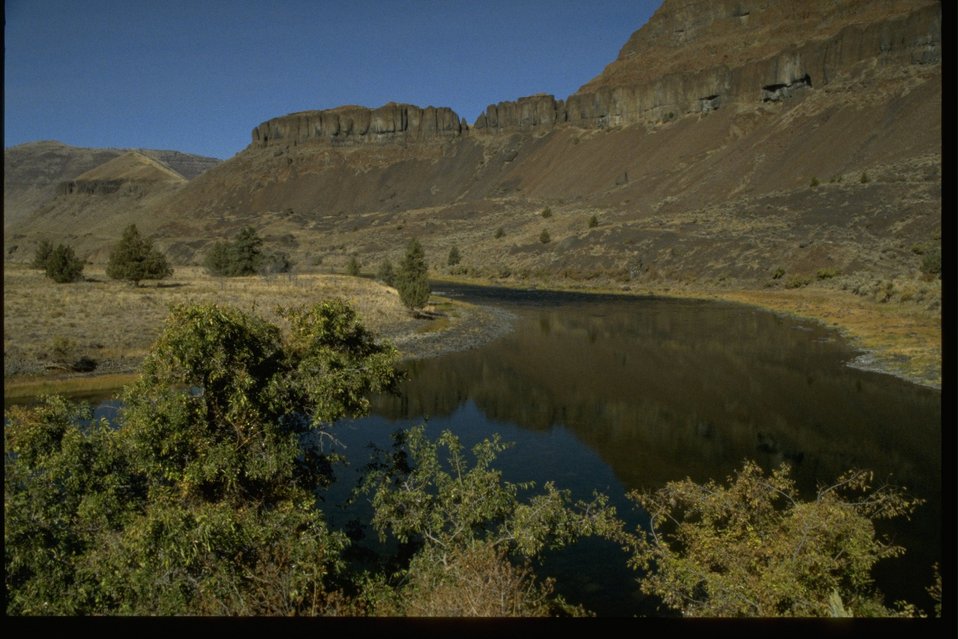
Riparian vegetation and juniper along John Day River with cliffs in the background.